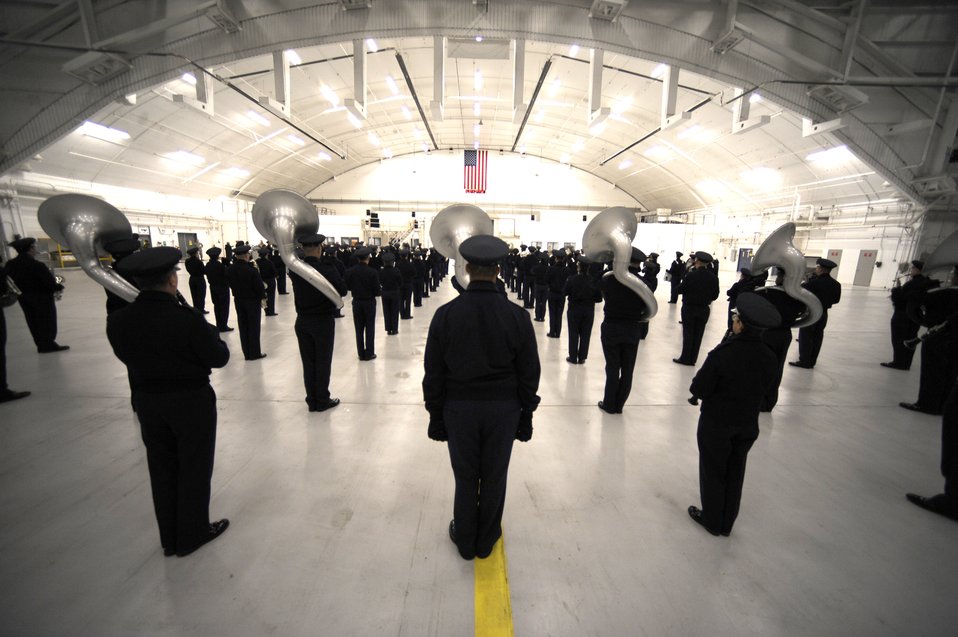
Air Force Band prepares for inauguration day

The 99-piece Air Force Band practices their music inside a hangar Jan. 7 at Andrews Air Force Base, Md., in preparation of their parade performance for the inauguration of President-elect Barack Obama.